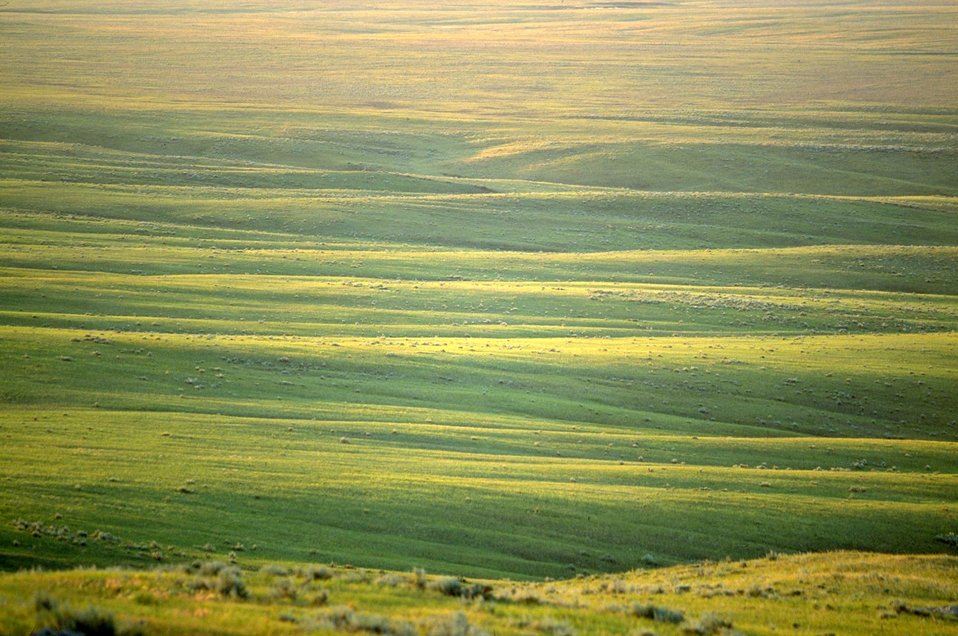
Grassland Vista 30 miles north of Belle Fourche